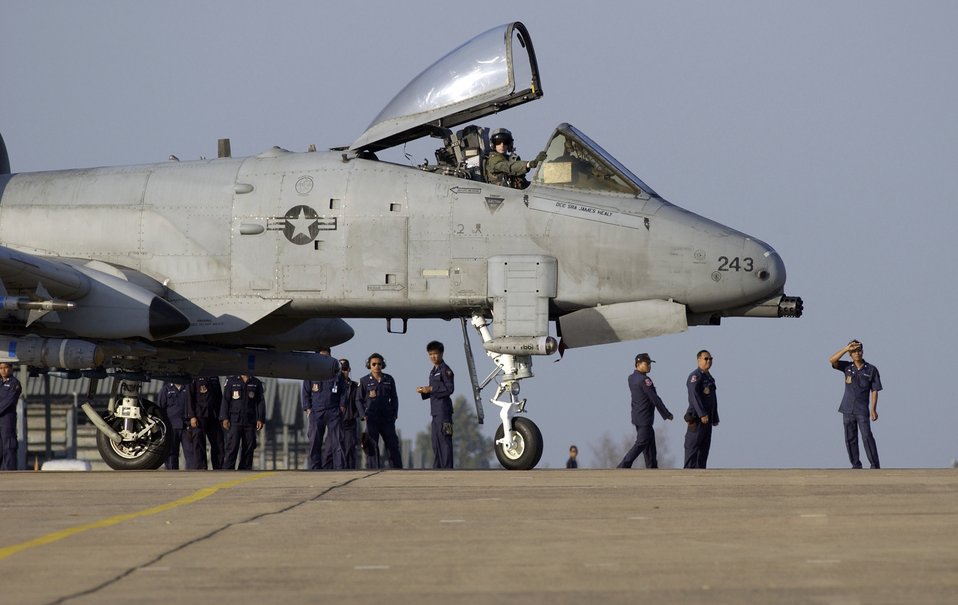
Cope Tiger '06

KORAT ROYAL AIR FORCE BASE, Thailand (AFPN) -- Thai military members watch Maj. Chris Price taxi his A-10 Thunderbolt II before an exercise Cope Tiger '06 mission here Feb. 8. Major Price is an A-10 pilot with the 25th Fighter Squadron at Osan Air Base, South Korea.